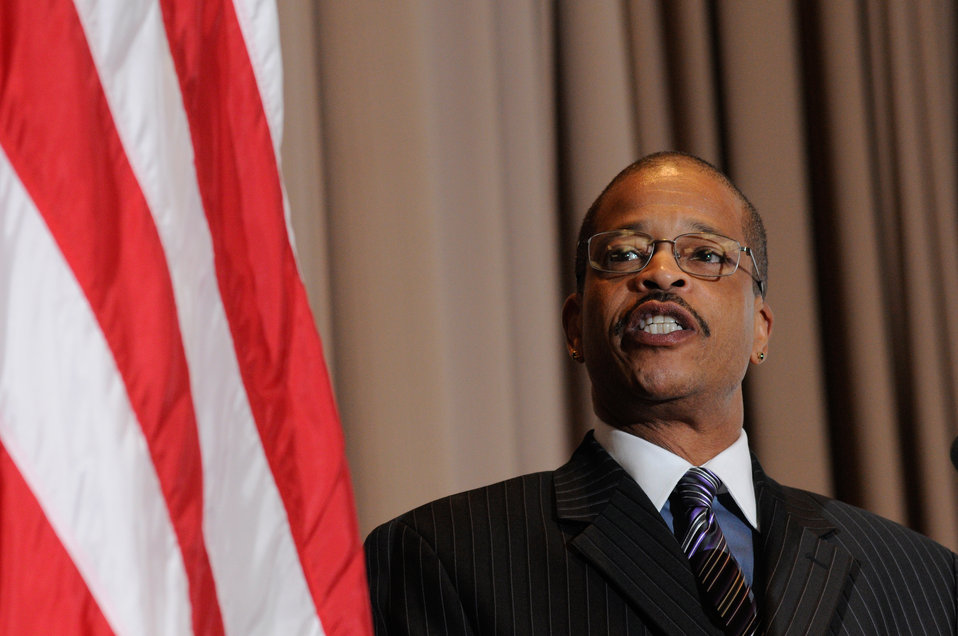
U.S. Department of Agriculture (USDA) Chief Human Capital Officer William P. Milton, Jr. makes closing remarks during the USDA Dr. Martin Luther King, Jr. National Service Day presentation of the Drum Major for Service Awards at the USDA Jefferson Auditorium on Tuesday, Jan. 15, 2013.